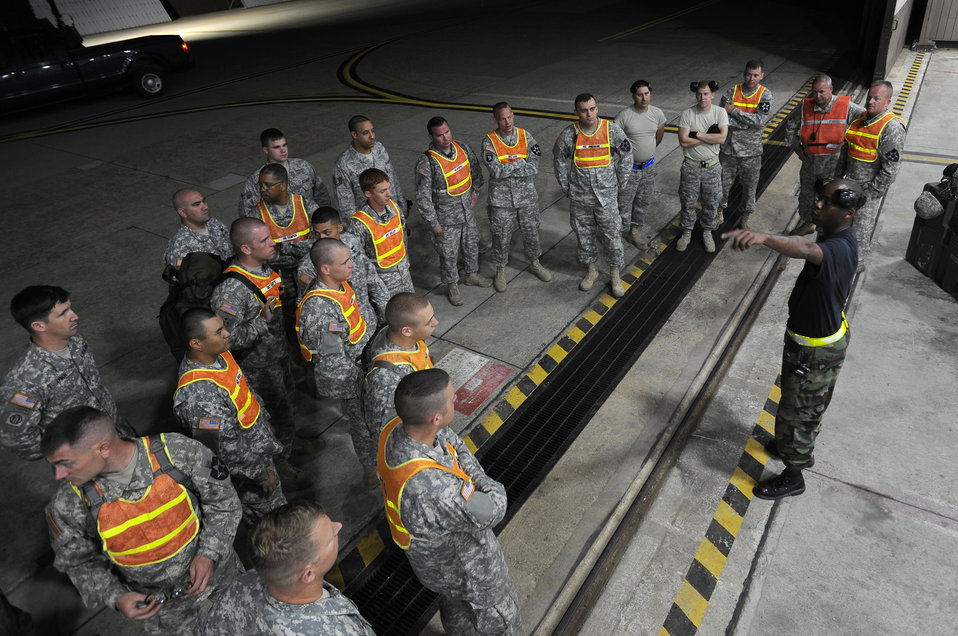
Yokota operations commander discusses importance of worldwide mobility presence

Soldiers receive a safety brief from Staff Sgt. Lacarvia Heart Sept. 9, 2009, before off-loading three new AH-64D Apache Longbows from a C-17 Globemaster III, on at Osan Air Base, Korea. The Soldiers are from the 2nd Combat Aviation Brigade, Camp Humphreys, Republic of Korea.